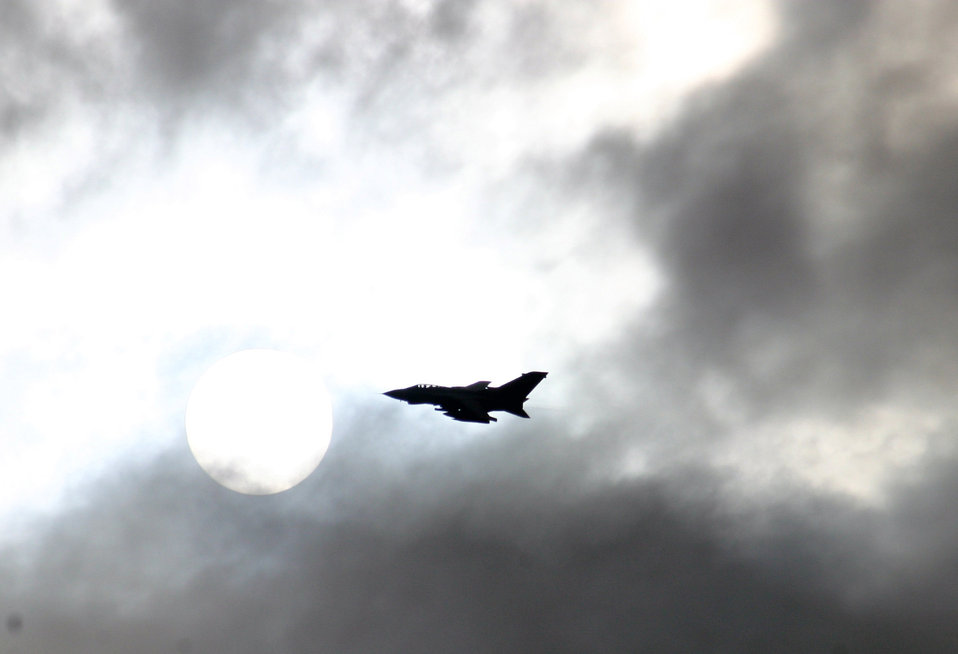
American, British forces hone warfighting skills together

A British GR-1 Tornado provides close-air support for American Soldiers during a mission rehearsal exercise at the Joint Readiness Center in Fort Polk, La.